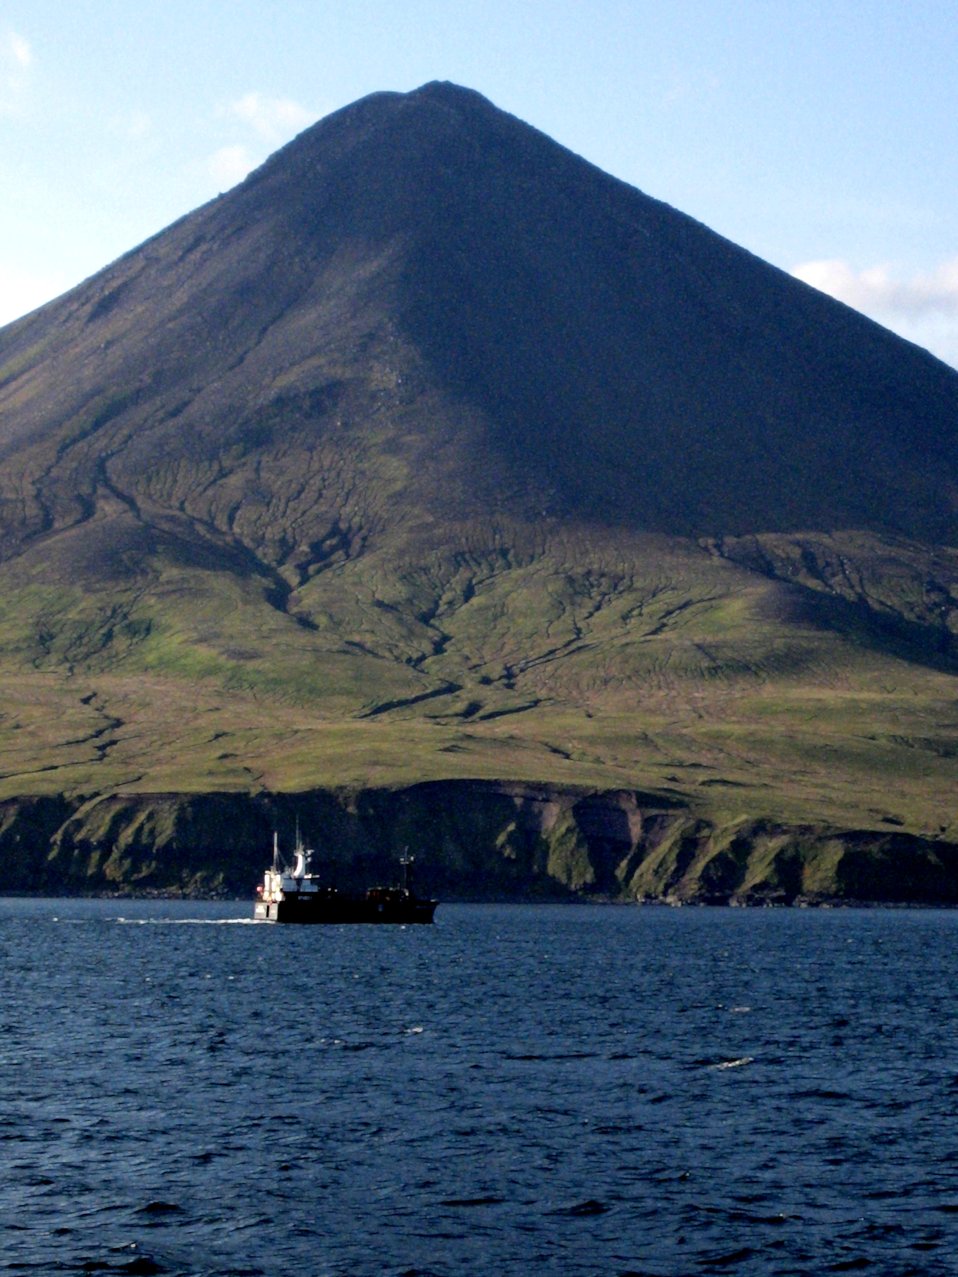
A conical volcano on Atka Island.